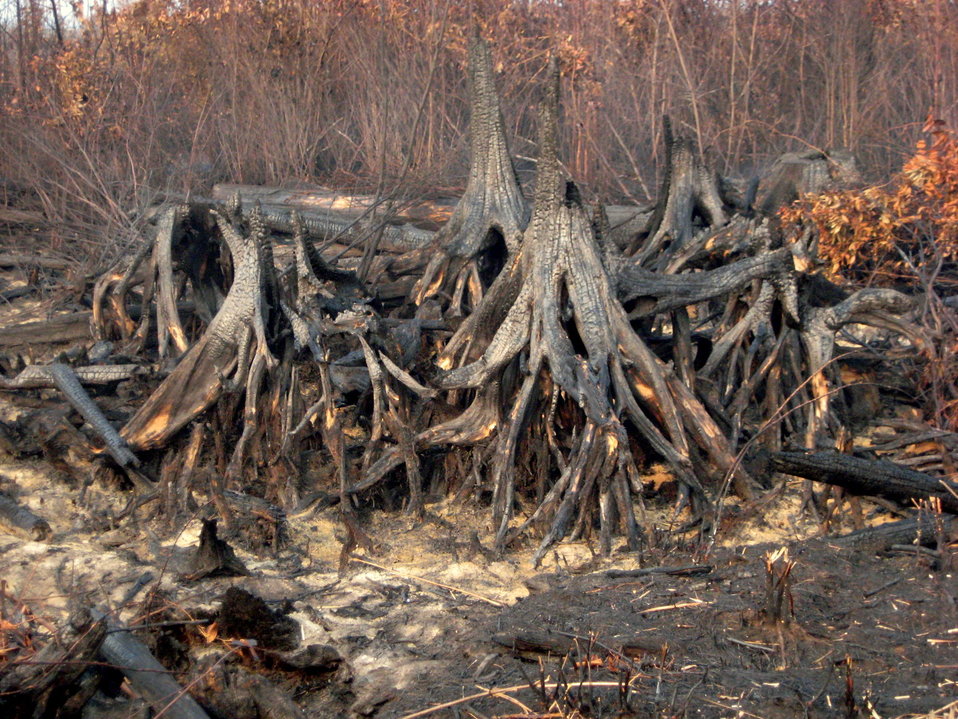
Roots exposed

Suffolk, VA, August 2011: Burned stumps show why falling trees were a hazard at the Lateral West Fire in Great Dismal Swamp. In some areas, the Lateral West and 2008 South One fires combined to burn peat 6 feet down.